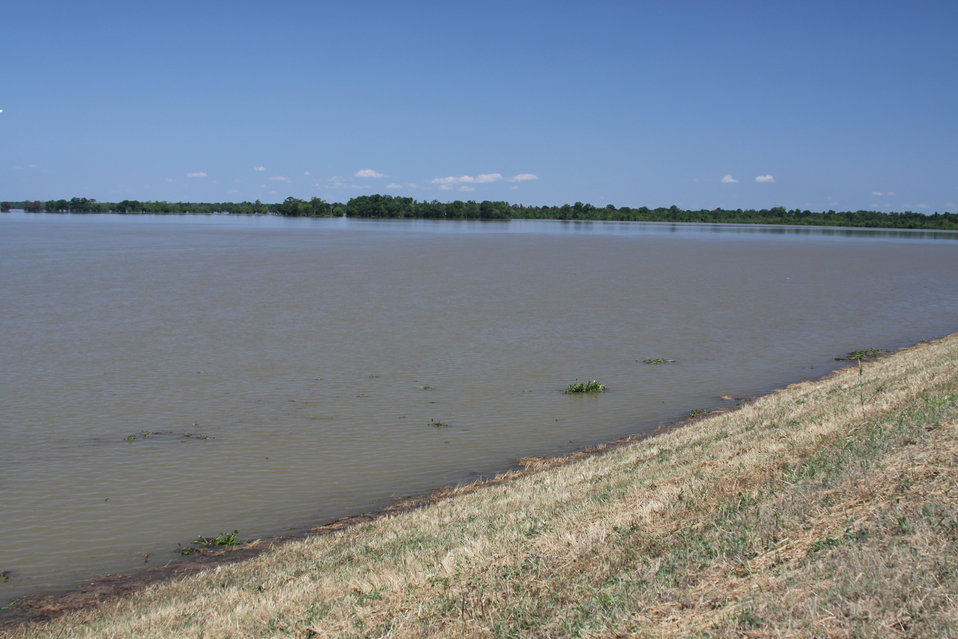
A soybean field flooded in Pointe Coupee Parish, LA, on Tuesday, May 17, 2011.